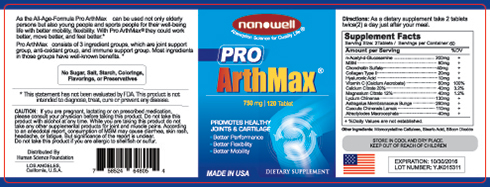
RECALLED – Dietary Supplement

January 13, 2014 – Product Recall – Human Science Foundation Issues Voluntary Nationwide Recall of Pro ArthMax Due to Undeclared Active Pharmaceutical Ingredients.